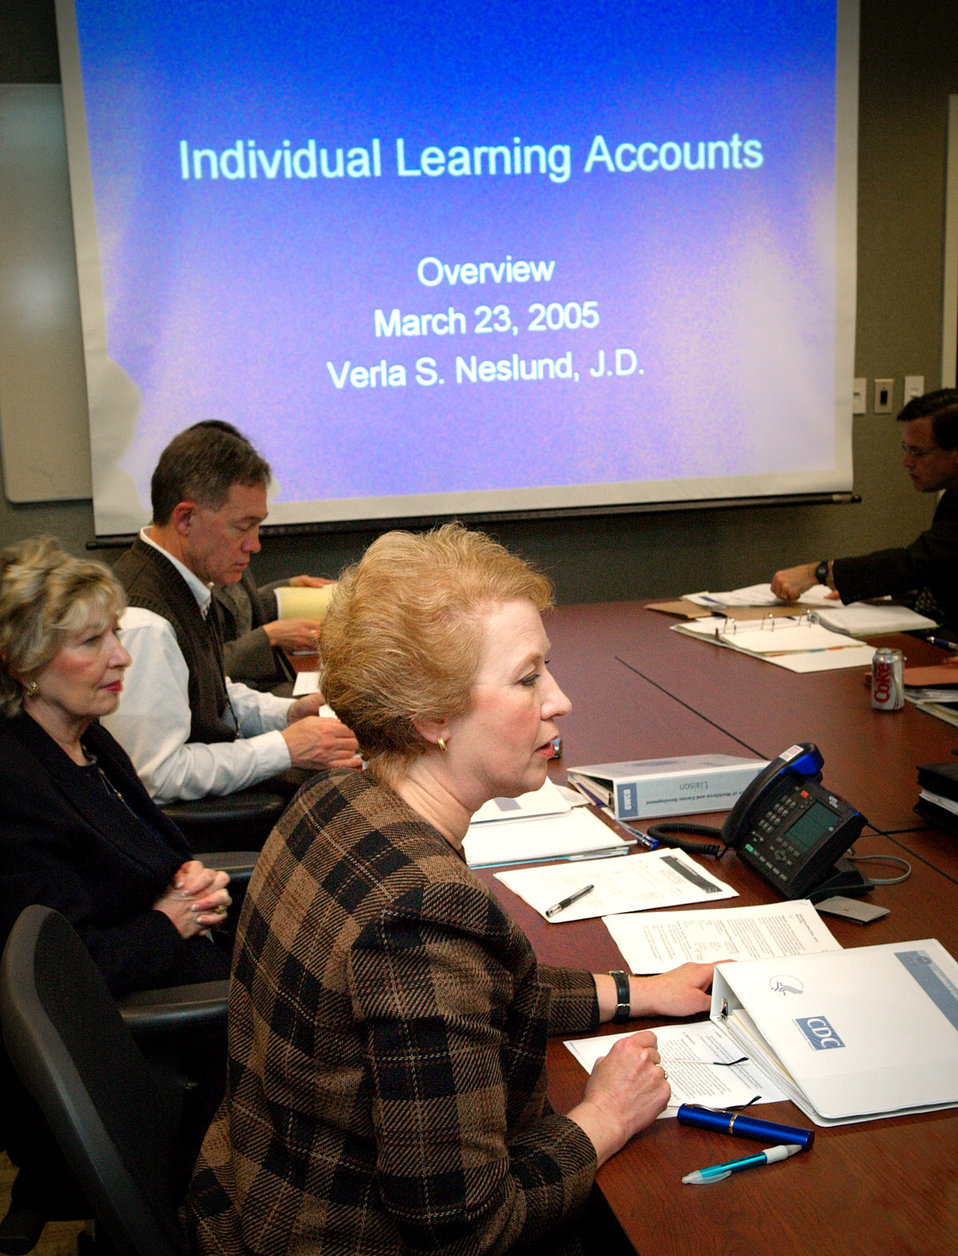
This photograph showed at left from front to back, VP for Programs, CDC Foundation, Verla Neslund; Sr. Service Fellow, Joan Cioffi; Dir. of the Office of Workforce and Career Development (OWCD), Stephen B. Thacker while they were attending a meeting of the CDC's Excellence in Learning Council (ELC).